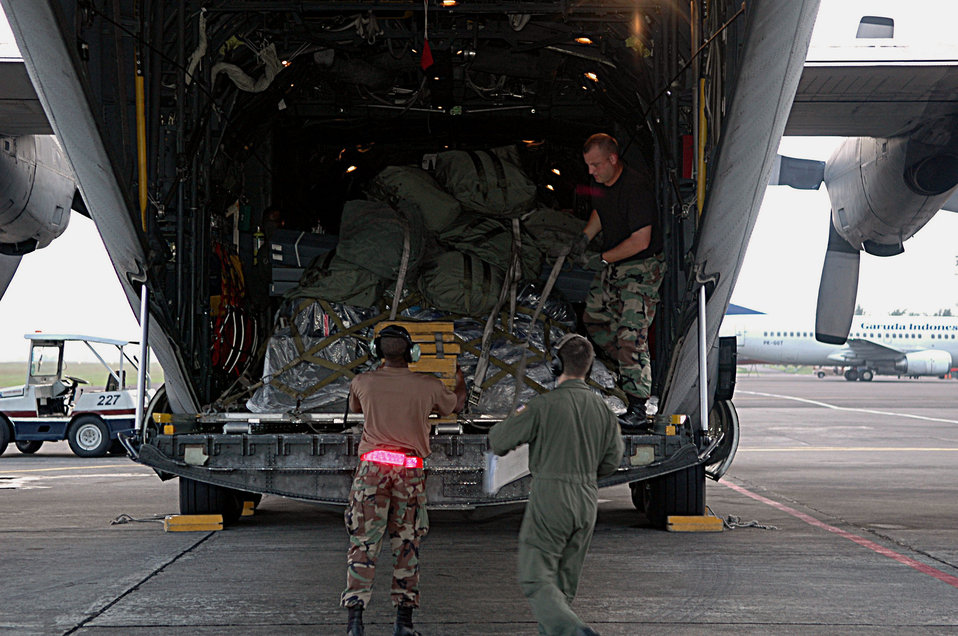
Earthquake relief

Airmen from the 36th Airlift Squadron and Combat Mobility Element at Yokota Air Base, Japan, unload supplies and equipment at Yogyakarta, Indonesia, on Thursday, June 1, 2006. The C-130 Hercules mission brought humanitarian relief aid to Indonesia, after an earthquake claimed the lives of more than 6,200 people and injured thousands more.